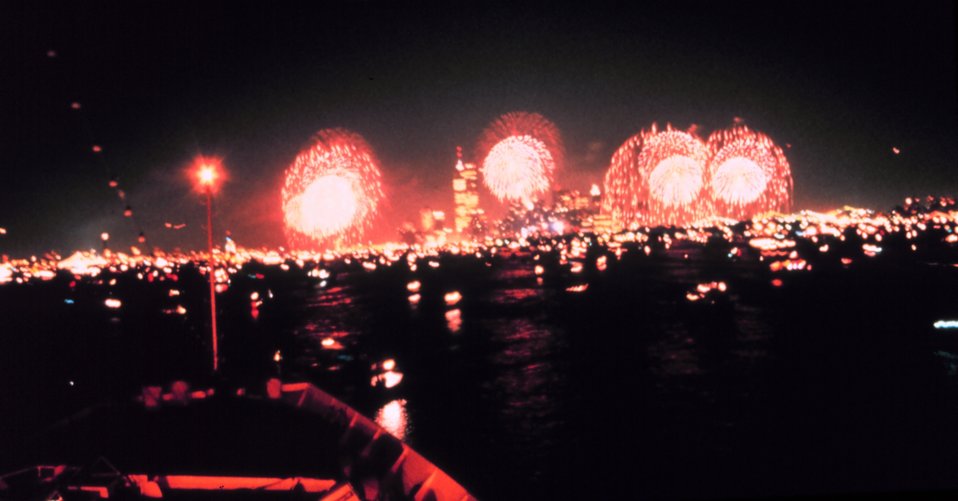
Fireworks over New York during Bicentennial celebration